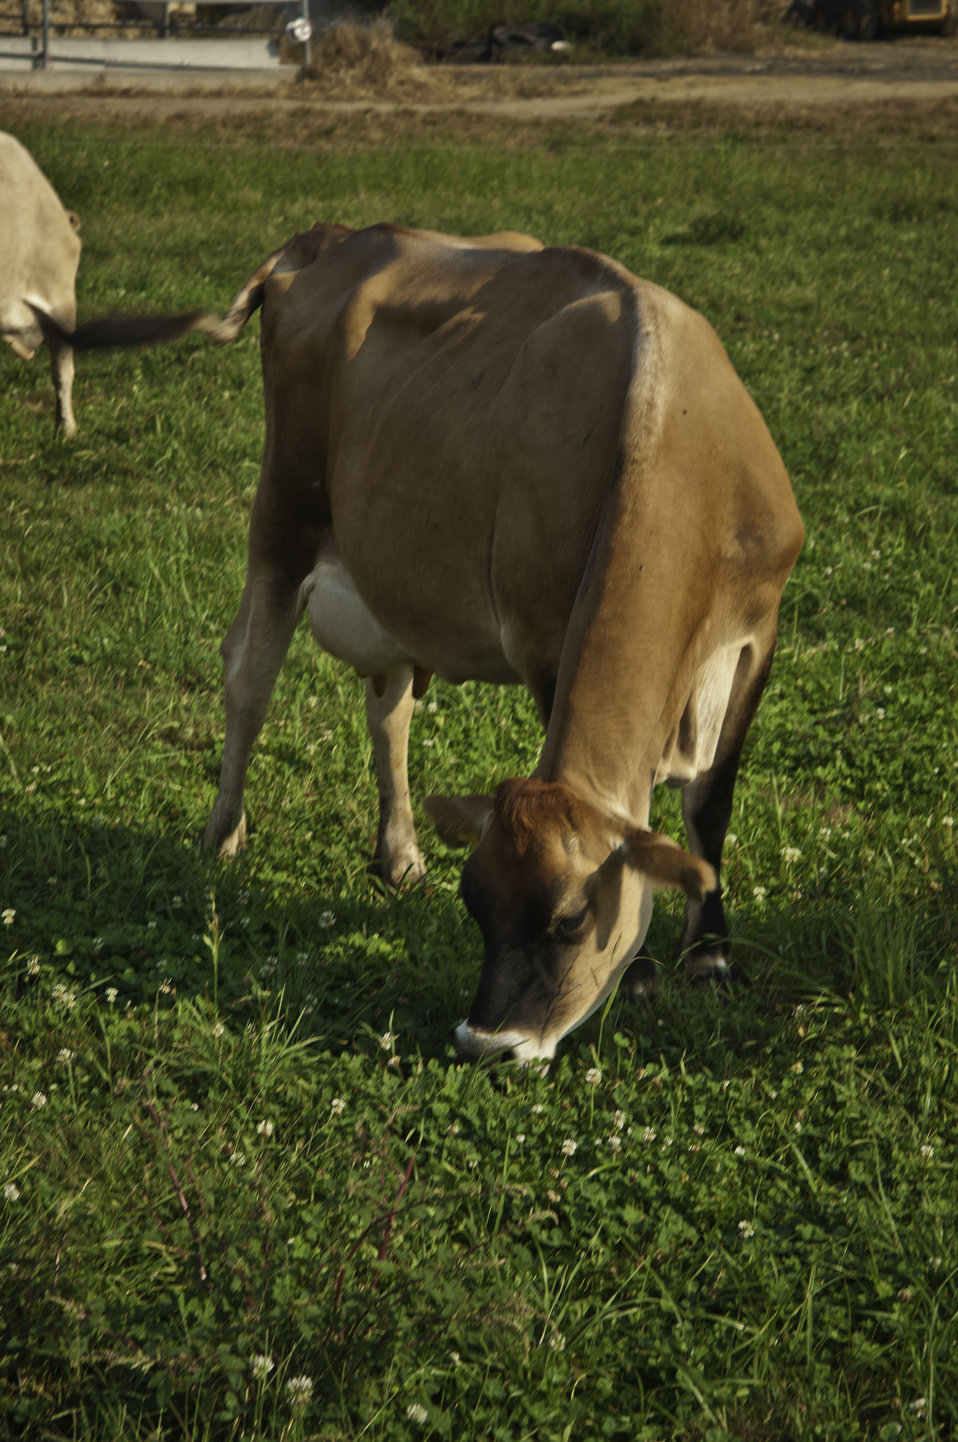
Jersey and Holstein cows of Chapel’s Country Creamery in Easton, MD graze on grass at the farm. The dairy produces artisanal cheeses with high quality fresh raw milk, rich in cream. The cows graze on clover and rye grass on 45 acres of pasture. The cows are rotated among 32 different pastures to insure that the cows are eating the freshest and most nutritious part of the grass thus providing the highest quality of raw milk that is rich in cream. The milk is all-natural and contains no synthetic hormones, antibiotics, or chemical compounds.